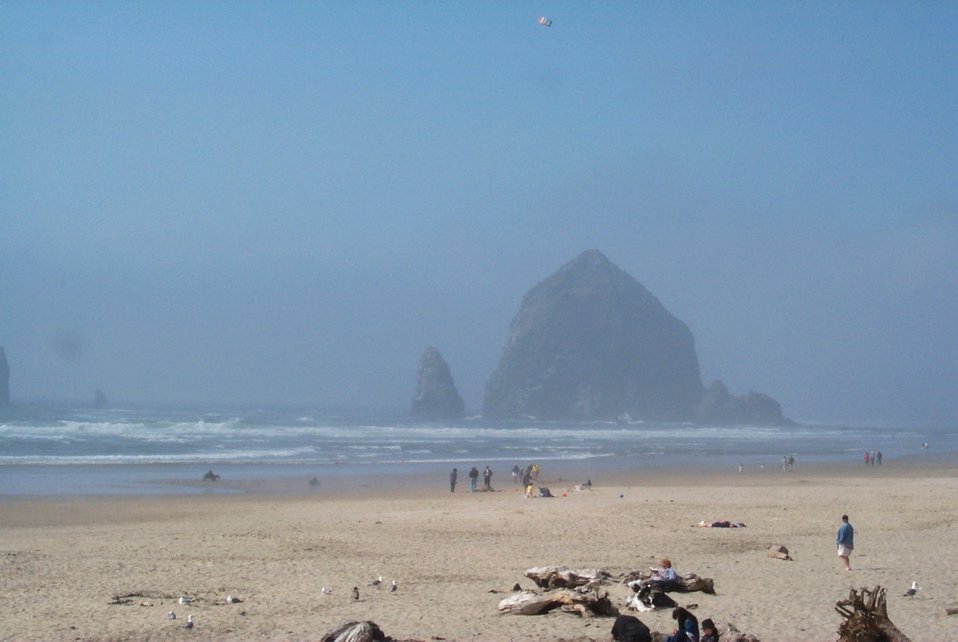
Haystack Rock at Cannon Beach on a misty day.